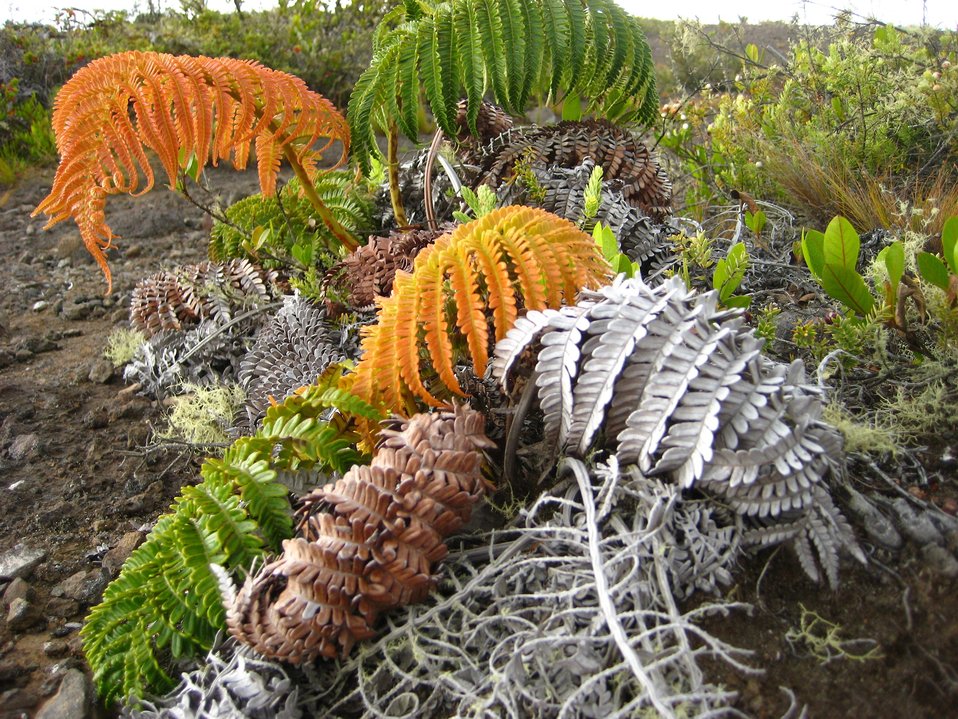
The amaumau fern (Sadleria cyathoides) which commonly grows in moist forests and colonizes lava flows.